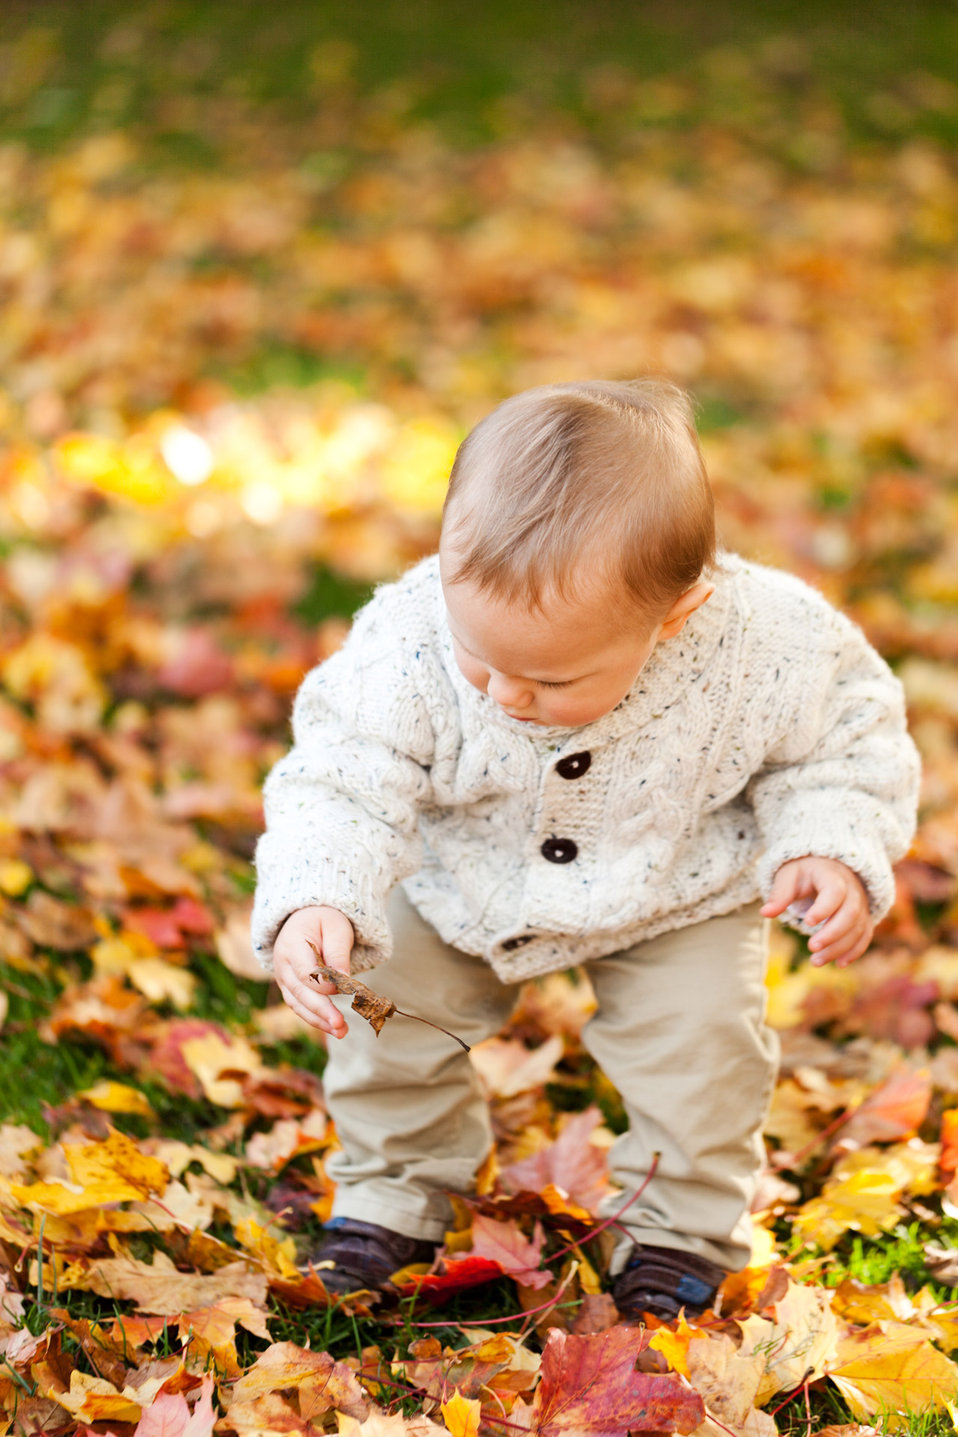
Picking up a leaf

Young baby boy is picking up a dry leaf in park in autumn.